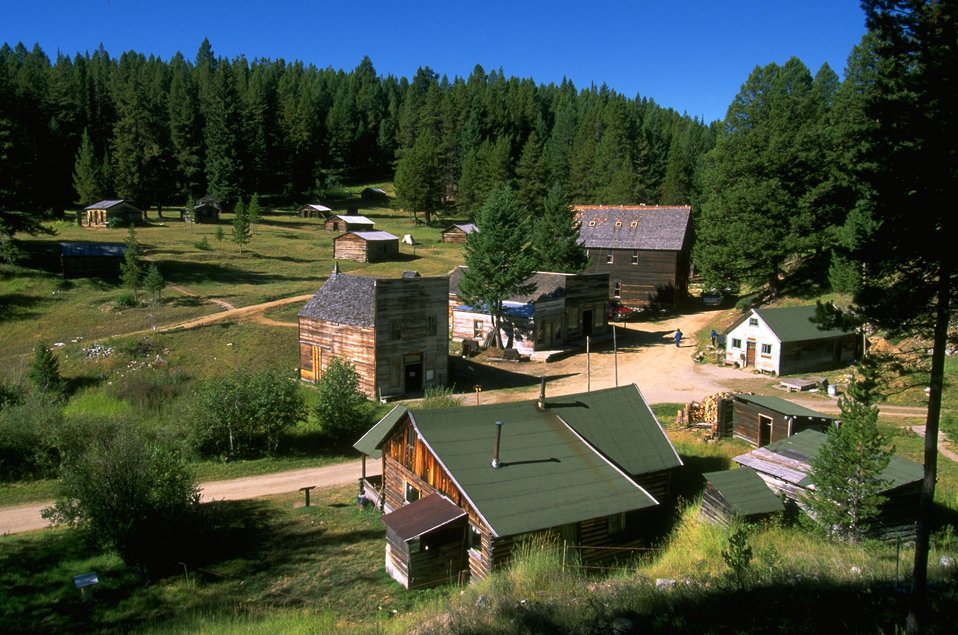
Garnet Ghost Town